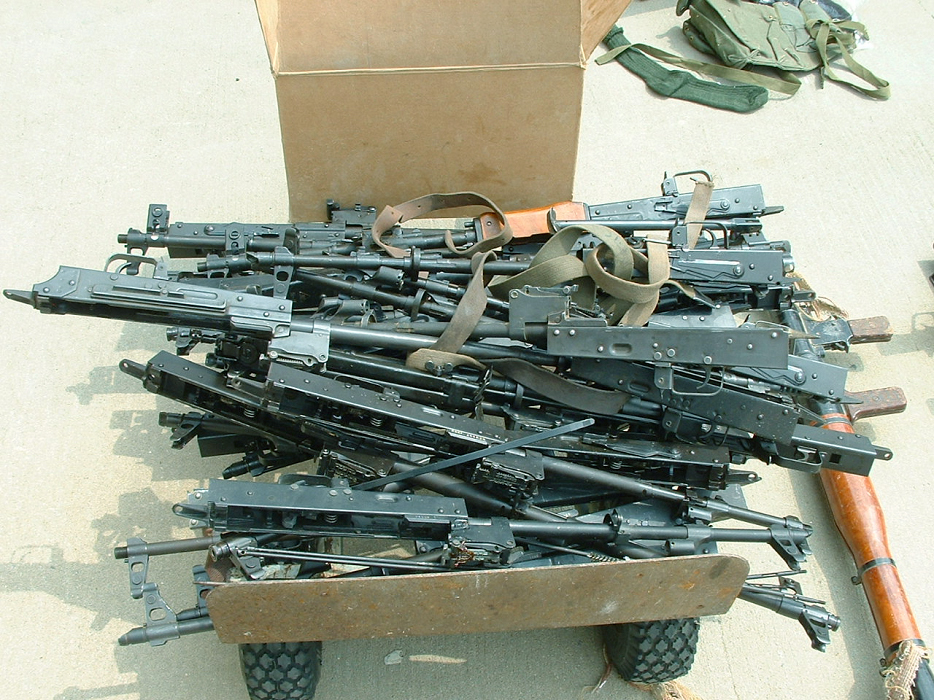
Suspected contraband

EGLIN AIR FORCE BASE, Fla. - Officials have preferred charges against Maj. Gregory McMillion after an investigation found evidence he allegedly shipped contraband items here from an Operation Iraqi Freedom deployment. The suspected contraband includes Iraqi AK-47s. Major McMillion is assigned to the base's 728th Air Control Squadron.